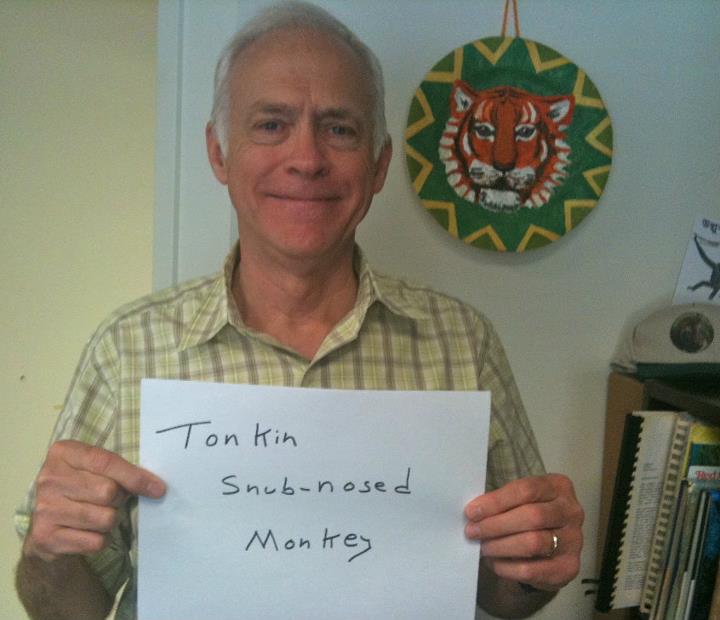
Fred Bagley, 'Tonkin Snub-Nosed Monkey,'

International Affairs participates in FFI's In Our Hands campaign